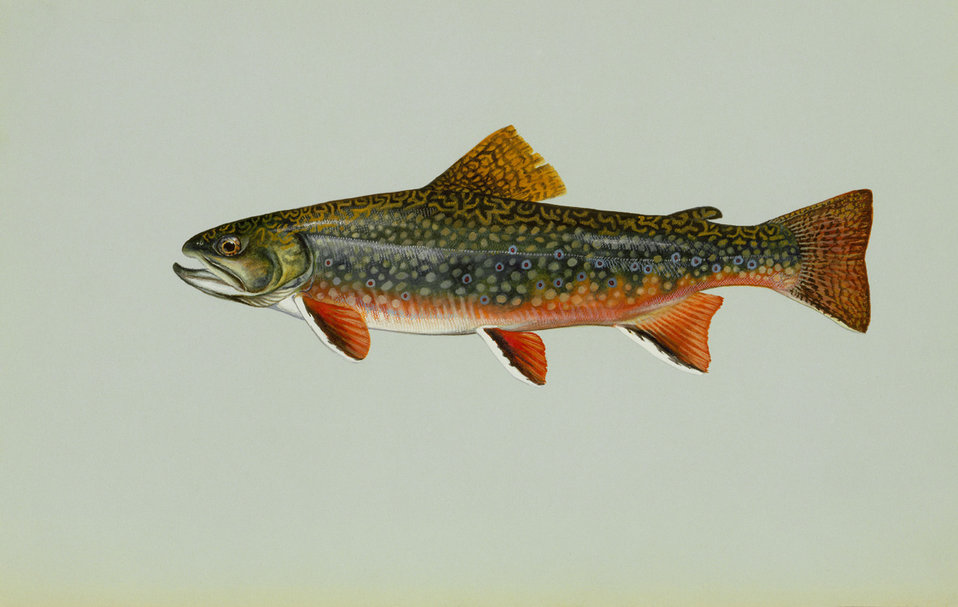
Brook trout artwork

Scans of artwork commissioned by the Fish and Wildlife Service in the 1970's. Original art is kept at DC Booth Fish Hatchery in Spearfish, SD.